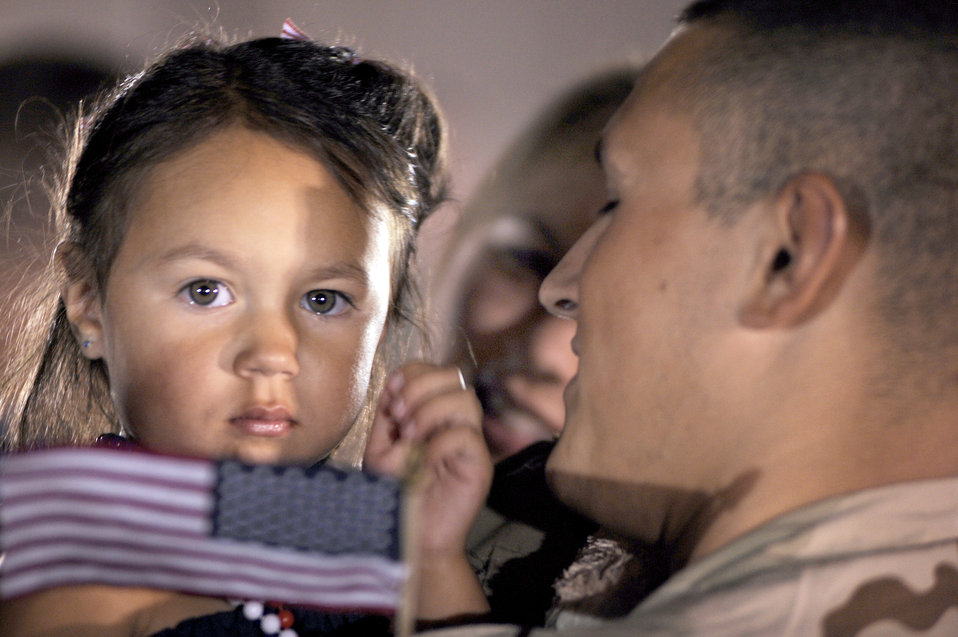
Talking it out -- getting through deployment

Staff Sgt. Anthony Cathcart is greeted by his daughter, Payton, and wife, Jaclyn, July 29, 2010, at Ellsworth Air Force Base, S.D., after returning from a deployment. Sergeant Cathcart is an aerospace maintenance jouneyman assigned to the 28th Aircraft Maintenance Squadron.